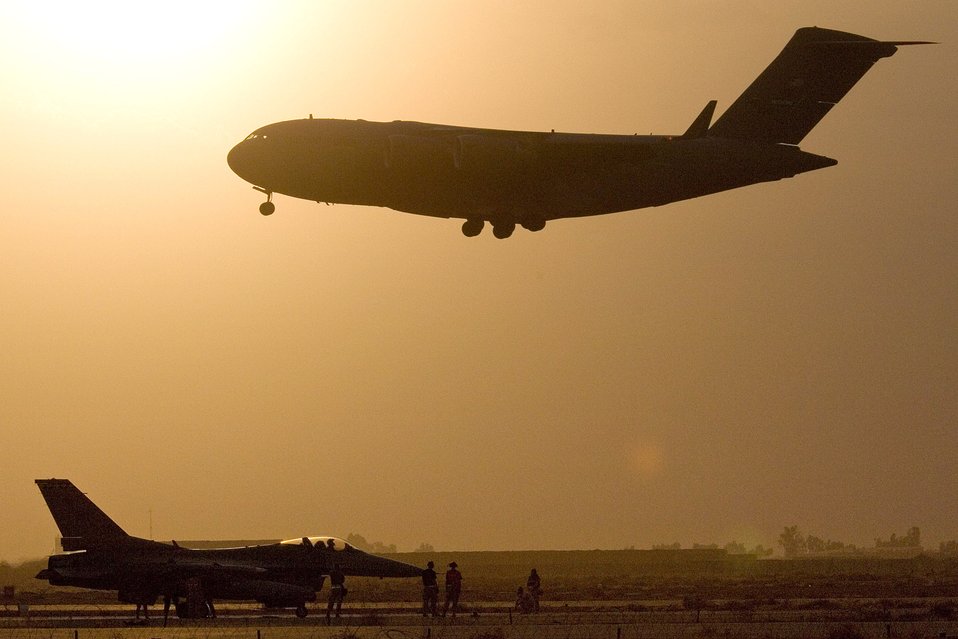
By dawns early light

BALAD AIR BASE, Iraq -- A C-17 Globemaster III lands while a F-16 Fighting Falcon is readied for takeoff. The aircraft and their crews provide air support as needed for the war on terror.